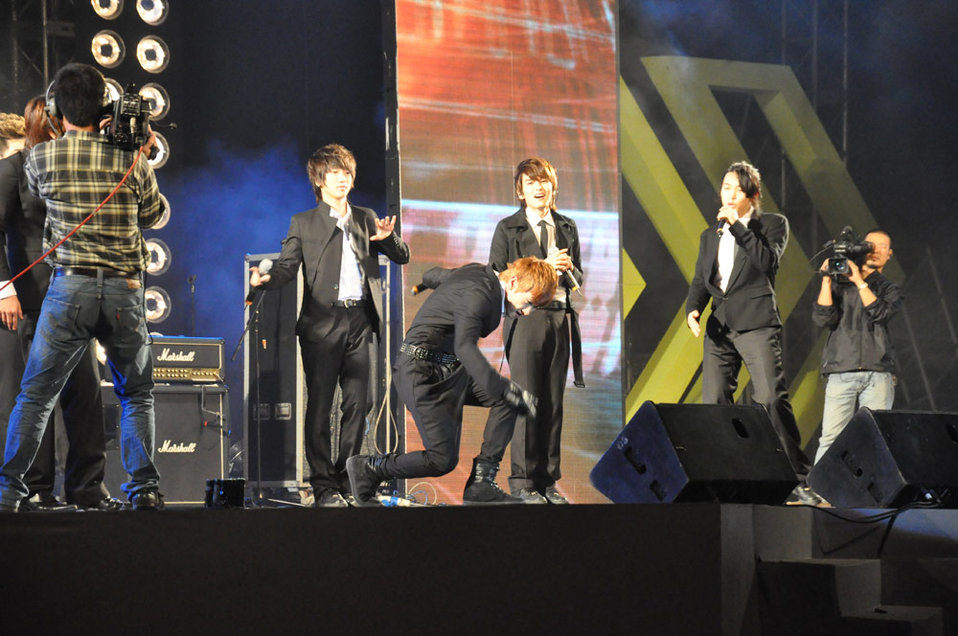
USAID Vietnam and MTVEXIT against Human Trafficking

Hanoi concert, March 27, 2010